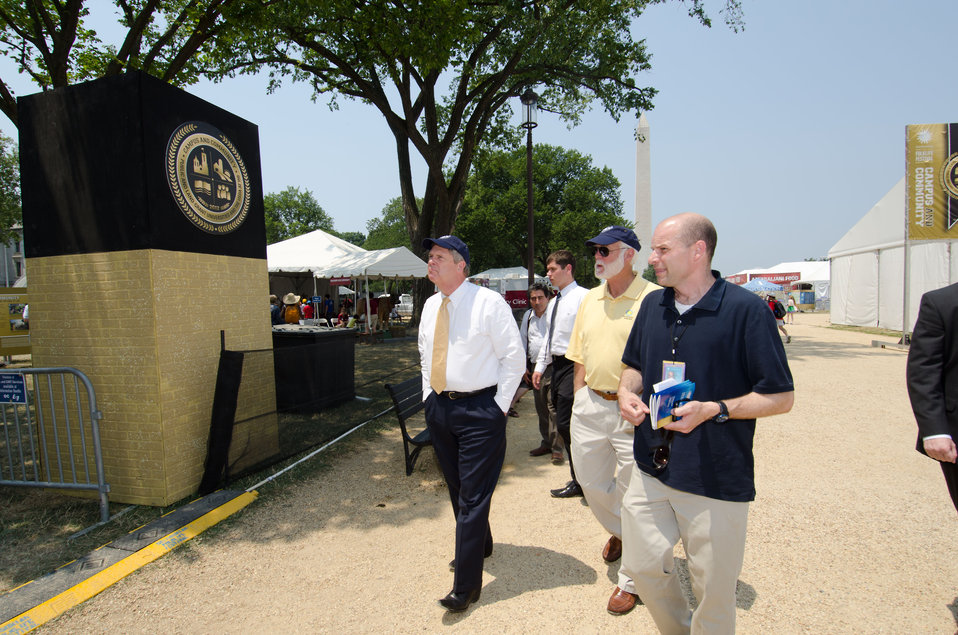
Smithsonian Institution’s Stephen Kidd guides Agriculture Secretary Tom Vilsack to the Campus and Community themed section of the 2012 Smithsonian Folklife Festival, on the National Mall in Washington, D.C. on Friday, June 29, 2012 Near by is the Mississippi State University Mobile Veterinary Clinic that serves the Northern Mississippi area by providing Spay and neuter services to those in need, and provides medical experience for students. One of the three themes this year is “Campus and Community.” It celebrates the 150 years of the USDA and the Land-Grant University System. The U.S. Department of Agriculture (USDA) and the Land-Grant system extend education across the country, contributing to American agriculture success and rural prosperity. “Campus and Community” has demonstrations, discussions, hands-on activities, and entertainment to that showcase the many ways that this partnership works to improve American agriculture and rural life.